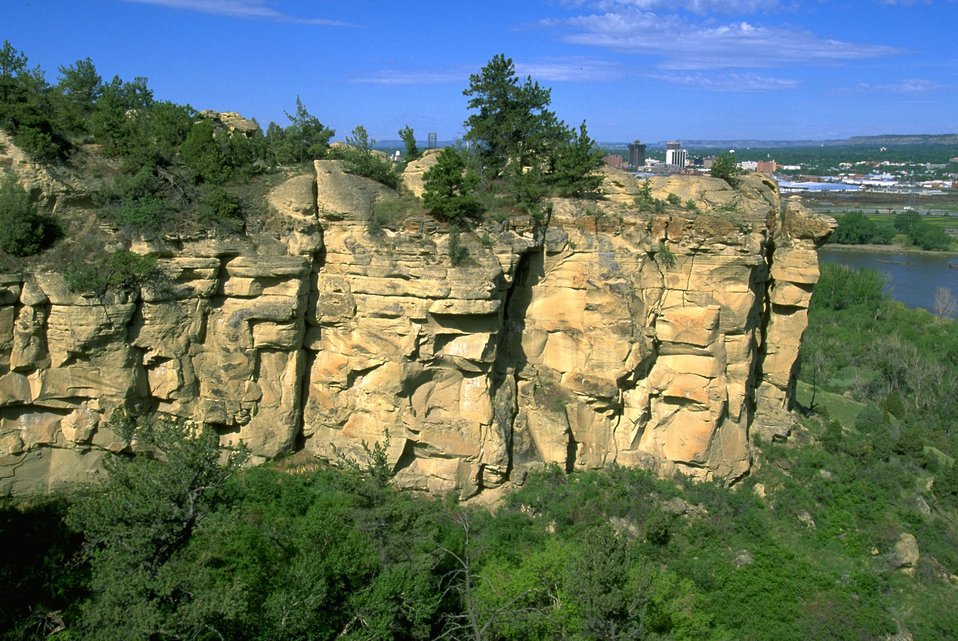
Sun shining on the sandstone cliffs in the Four Dances Natural Area with the Yellowstone River and Billings MT in the background